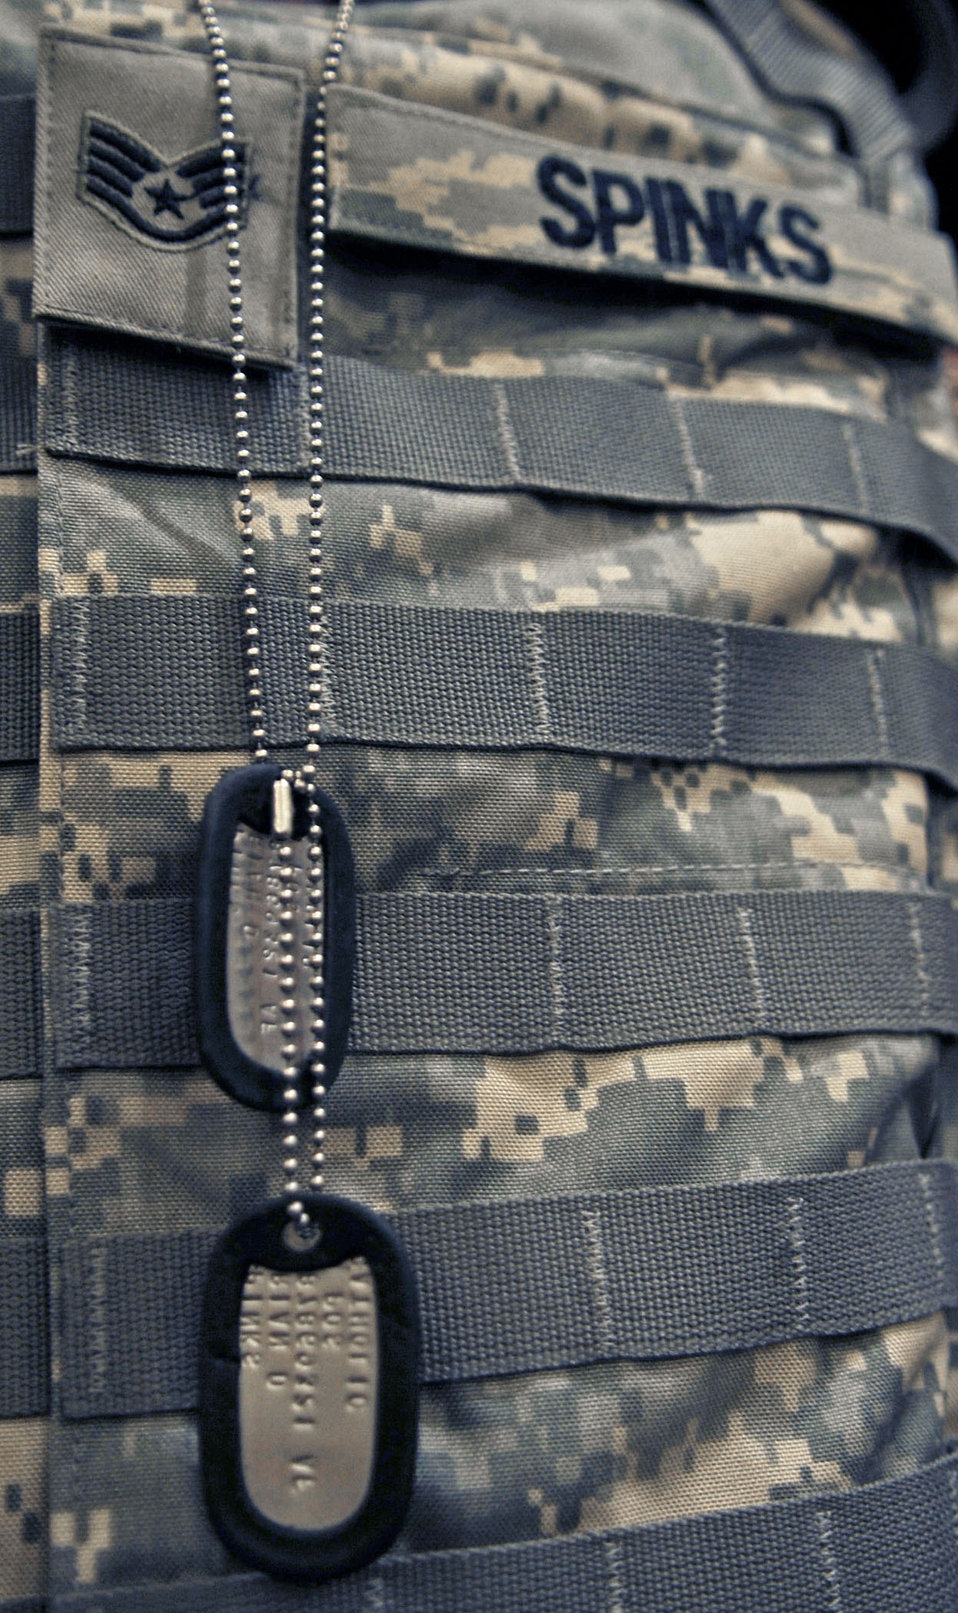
Airmen honor the fallen

Dog tags of the late Staff Sgt. Brian Spinks hang from his flack vest during his memorial Jan. 28, 2010, at Chapel 2 in Barksdale Air Force Base, La.